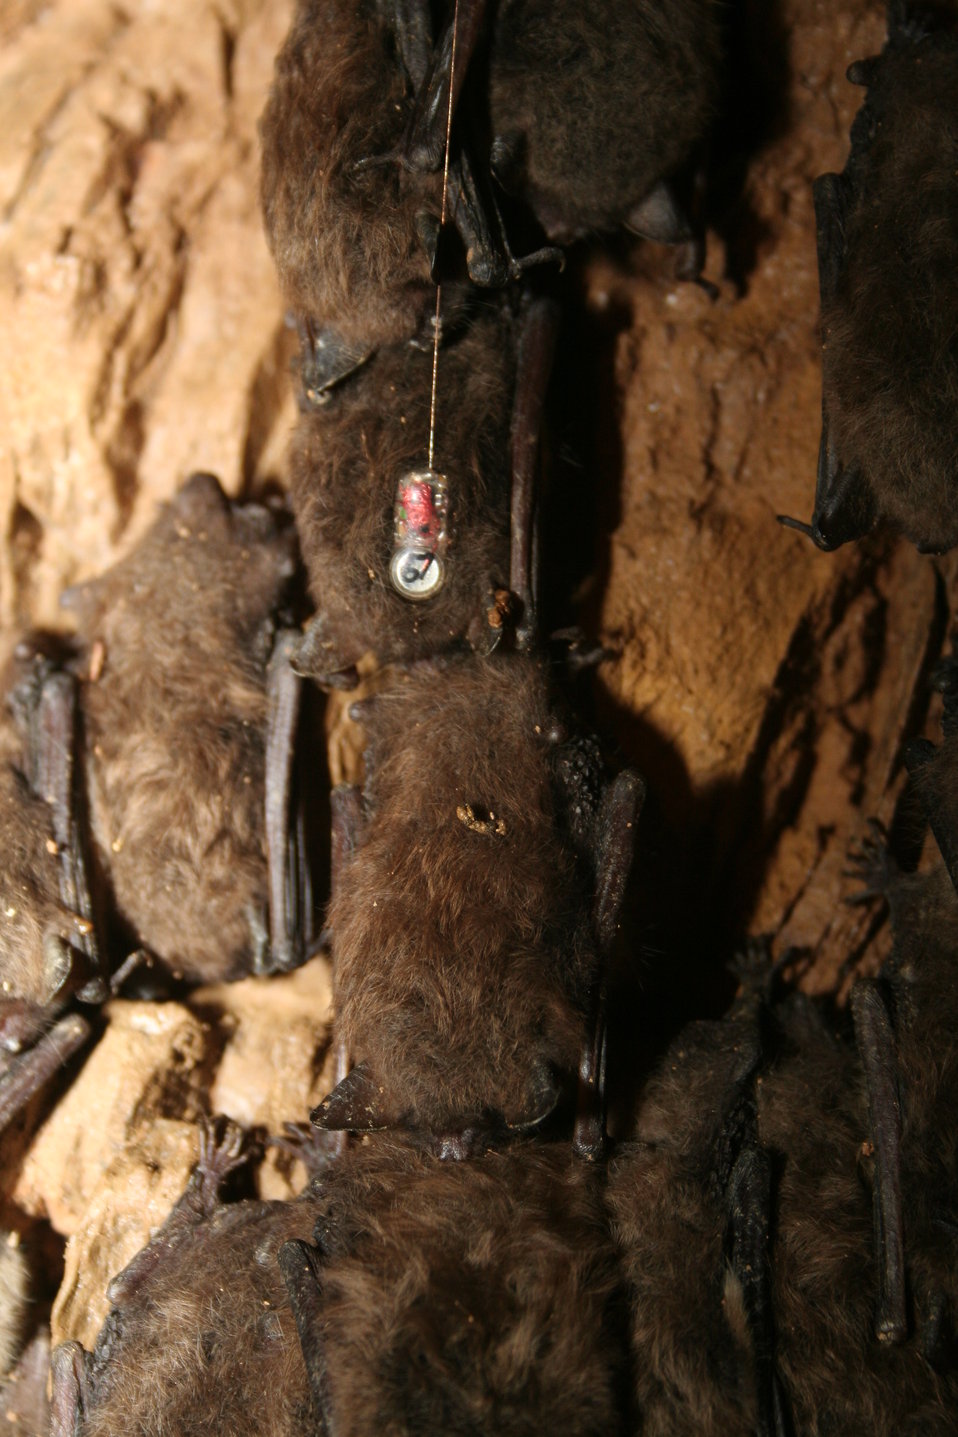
Single hibernating bat at Shindle Iron Mine, Pennsylvania, with attached temperature-sensitive radio transmitter

Credit: Greg Turner, Pennsylvania Game Commission

Image size: 2304p (32 in.) W x 3456p (48 in.) H, 72 ppi, 3 MB